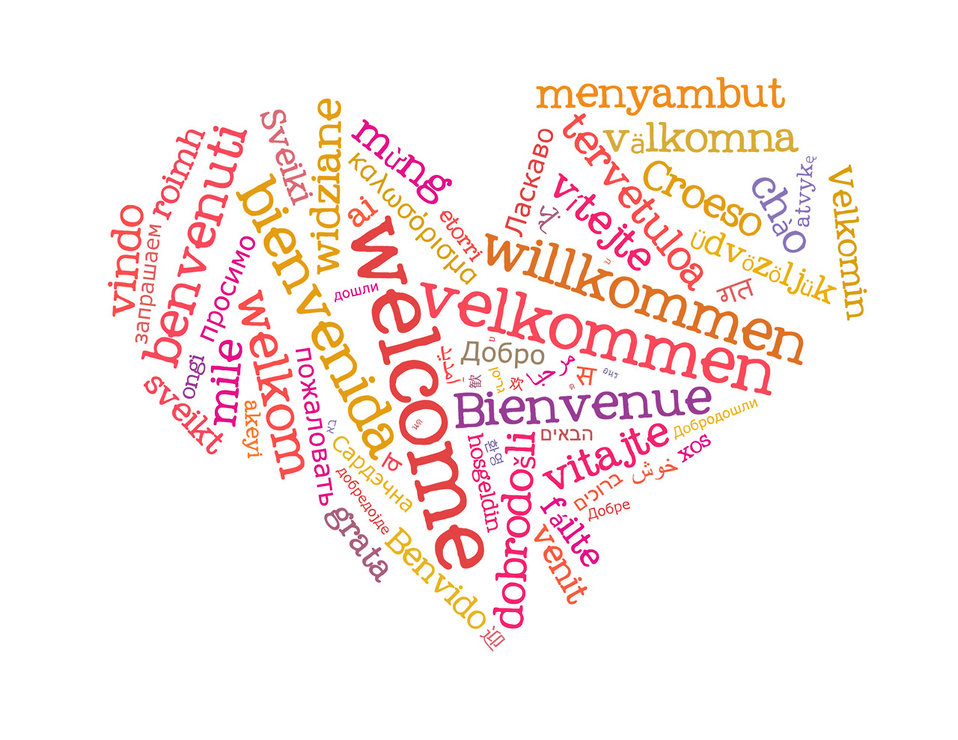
Wordcloud welcome heart 1

Word cloud in a shape of heart with a word of welcome in different languages.